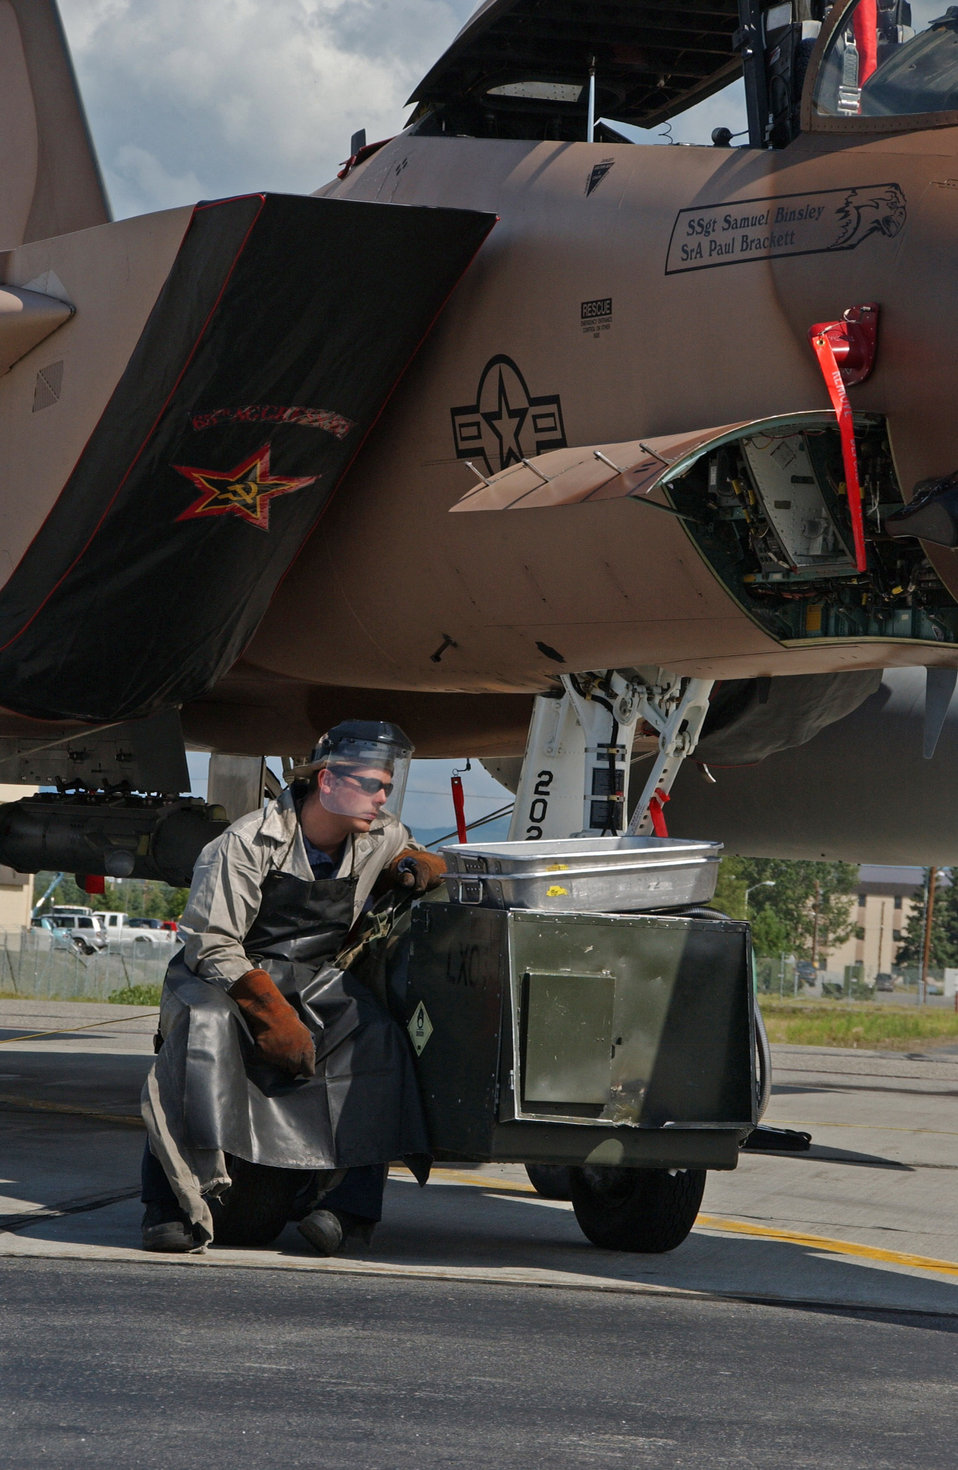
Red Flag-Alaska 07-3

Airman 1st Class Zachary Garretson services the liquid oxygen system on an F-15 Eagle July 9 on the Eielson Air Force Base, Alaska, flightline. The aircraft, from the 65th Aggressor Squadron at Nellis AFB, Nev., is at Eielson AFB to take part in Red Flag-Alaska 07-3, a multi-service, multi-platform coordinated, combat operations exercise, which runs through the July 27. Airman Garretson is a maintainer with the 57th Aircraft Maintenance Squadron at Nellis AFB.